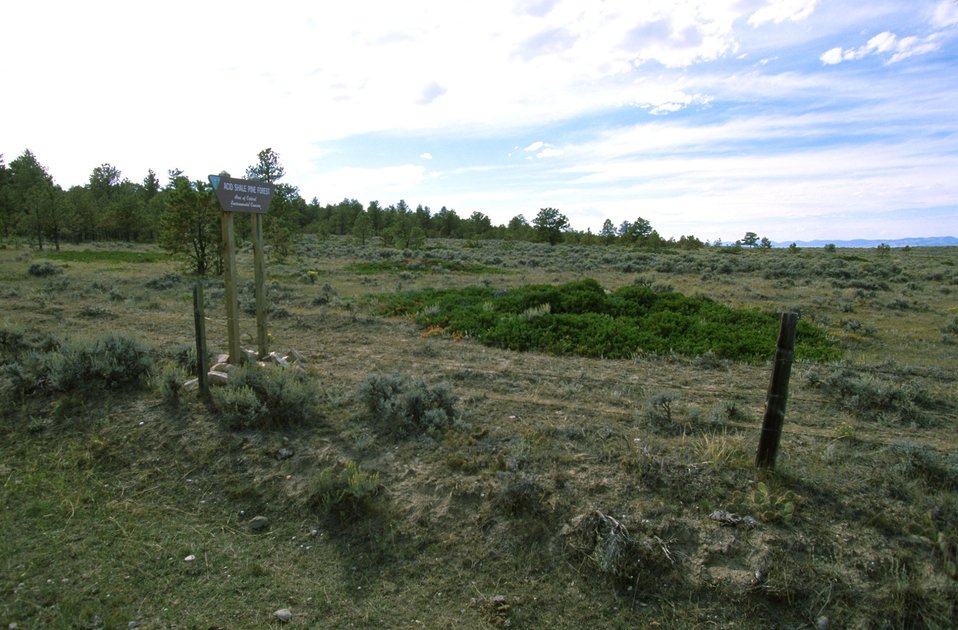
Acid Shale Area of Critical Environmental Concern (ACEC) with sign